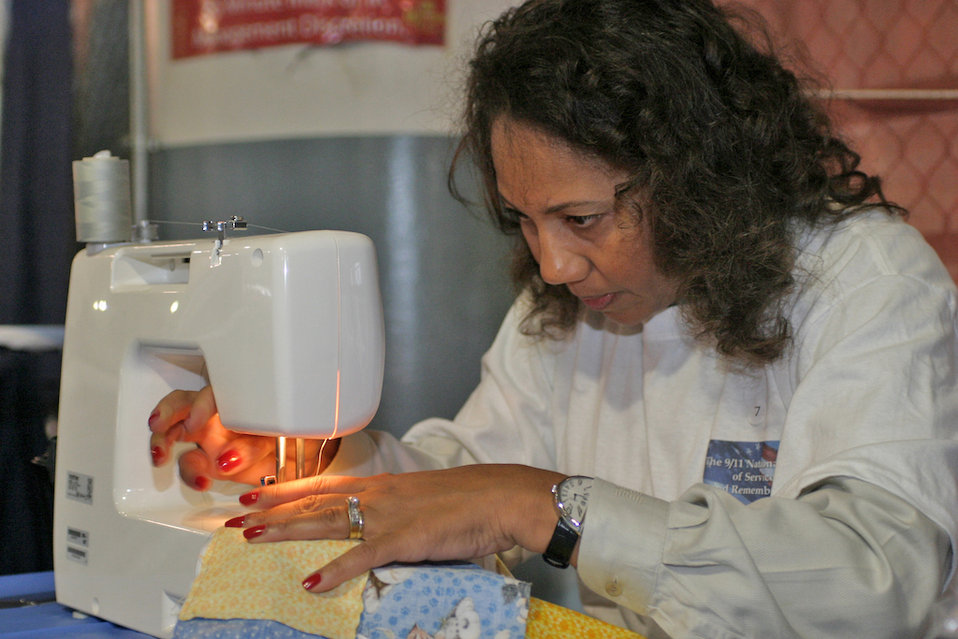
Sew much support

Almost 200 volunteers spent Sept. 11 participating in a Quilt-a-thon for Operation Kid Comfort, a National Day of Service activity in Washington, D. C. Alisa Dotson, a member of the IBM quilt team, joined others as they worked toward completing 40 quilts. The quilts feature family photos of deployed service members and are given to children 6 years old and younger.